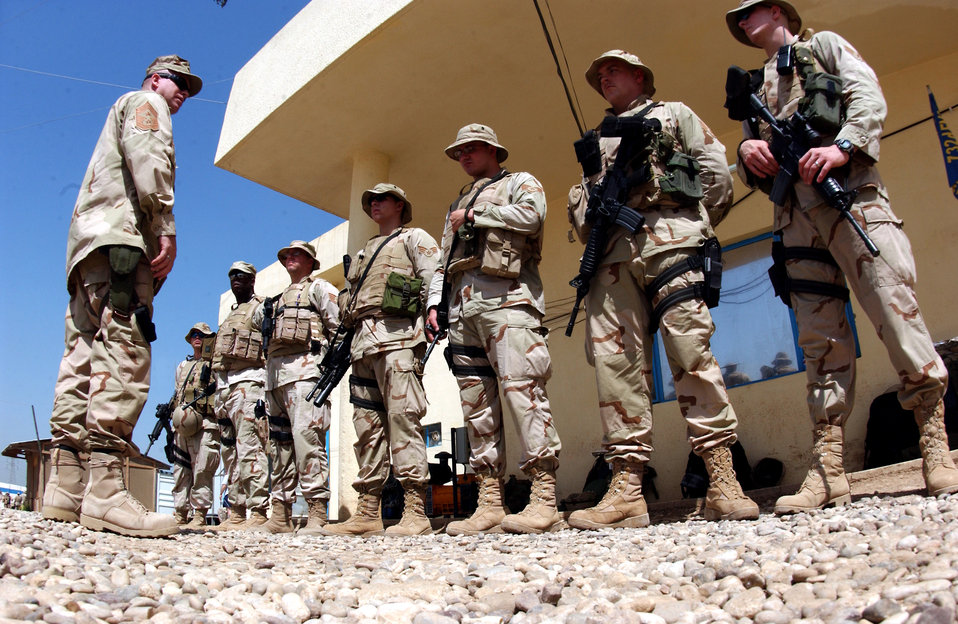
Airmen enable Iraqi police training

Chief Master Sgt. Layton Clark addresses Airmen about to go on duty at the Mosul Public Service Academy in Mosul, Iraq. Chief Clark is the 332nd Air Expeditionary Wing command chief.